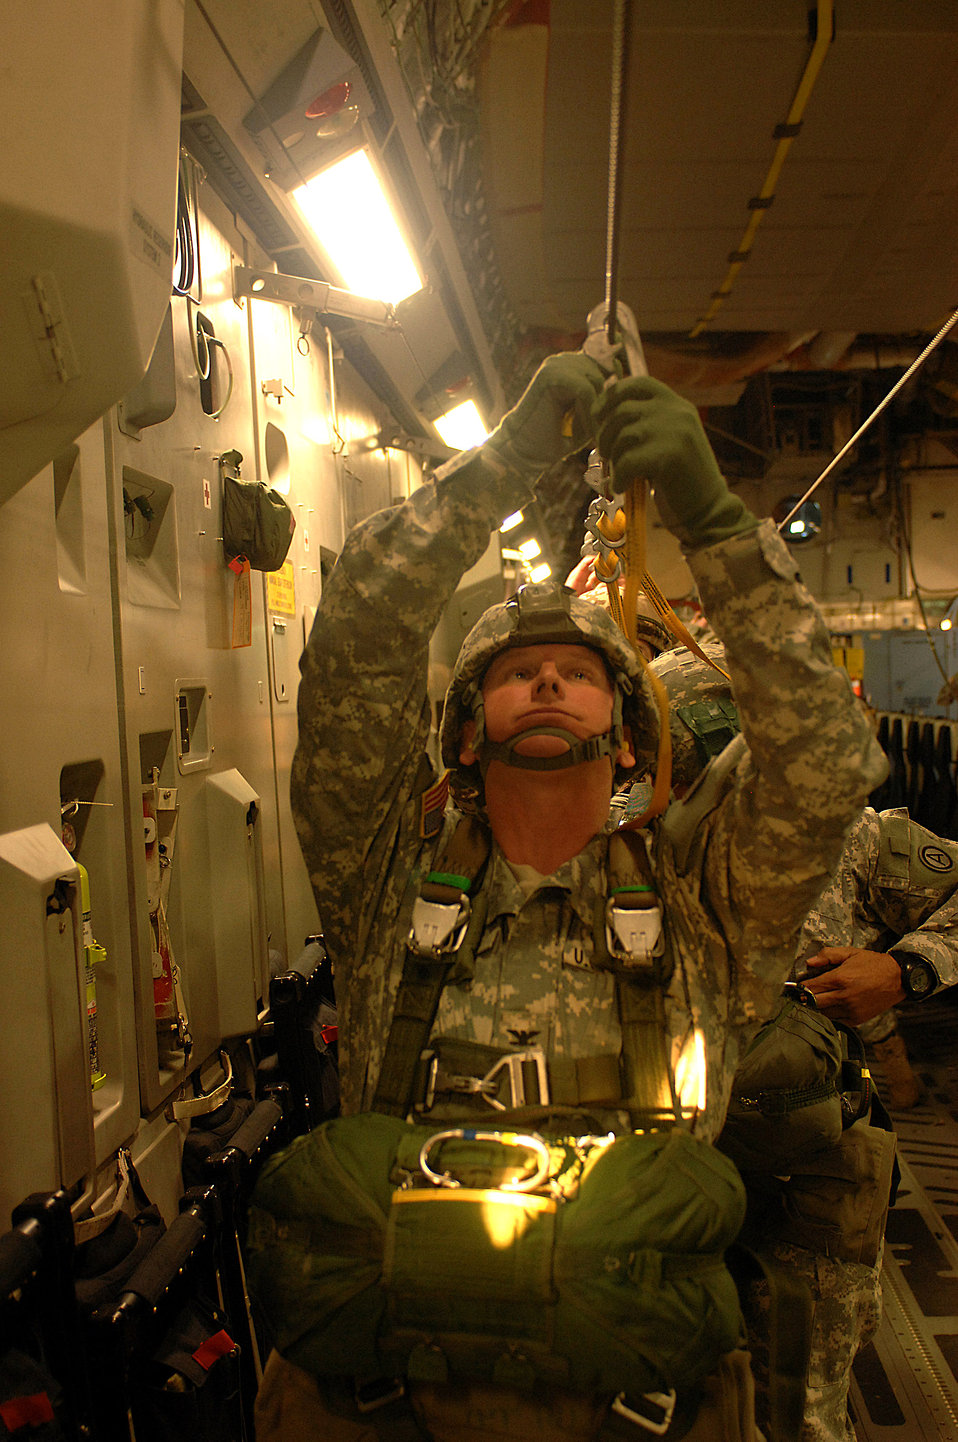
Exercise Bright Star 2007

Army paratroopers from the 20th Engineering Brigade, 101st Airborne Division, Fort Campbell, Ky., clip onto a static line inside a C-17 Gloemeater III aircraft for an air drop into Cairo, Egypt, Nov. 10 as part of Exercise Bright Star 2007. The C-17 is from Charleston Air Force Base, S.C.